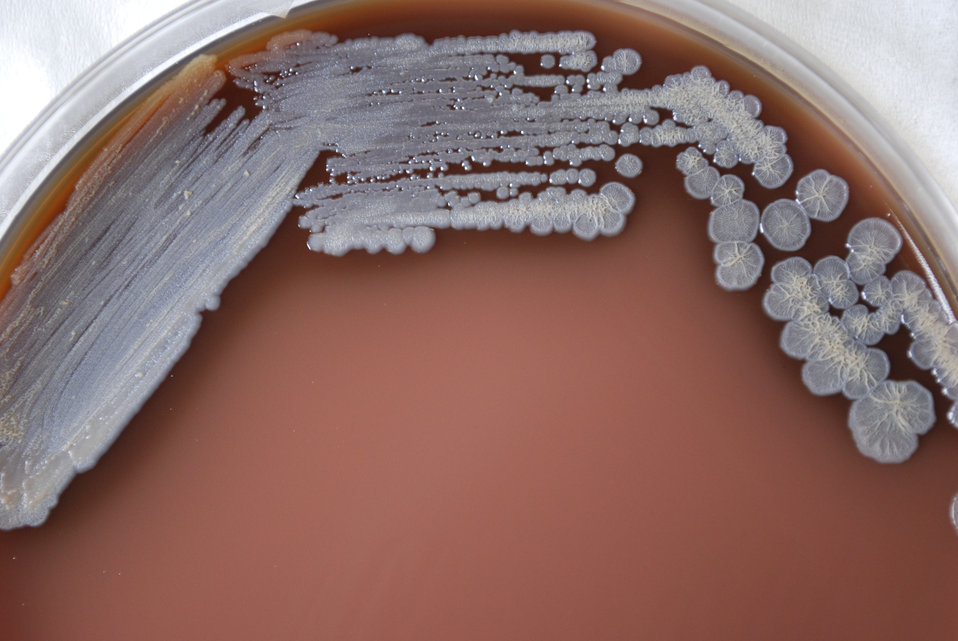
A closer view of PHIL 12279, this photograph depicts the colonial morphology displayed by Gram-negative Burkholderia pseudomallei bacteria, which was grown on a medium of chocolate agar, for a 72 hour time period, at a temperature of 37�C.